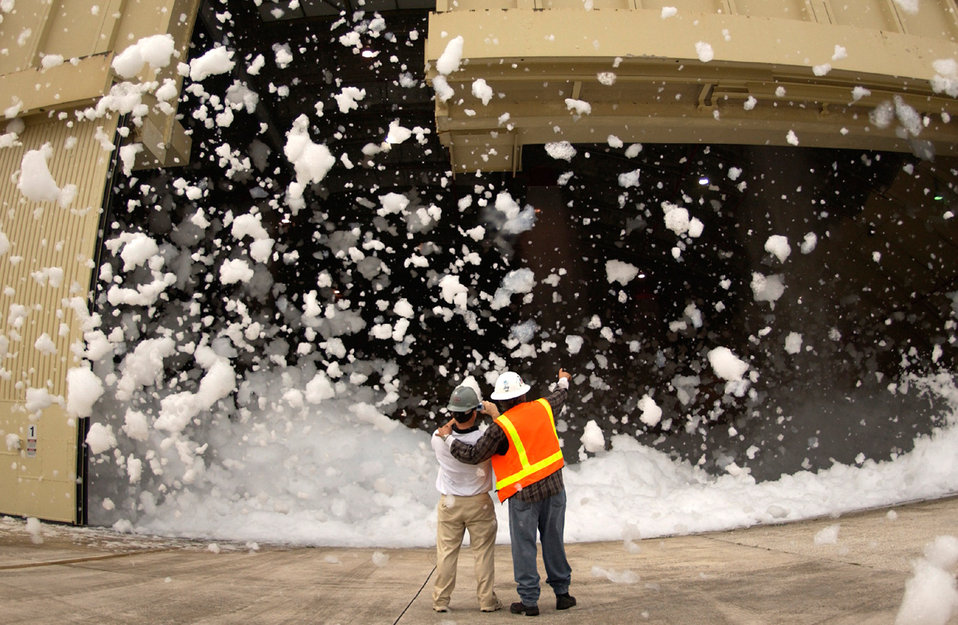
Fighting fire with foam

ANDERSEN AIR FORCE BASE, Guam -- Contractors for the 36th Wing's civil engineer squadron test and evaluate a high-expansion foam system here June 30. The system helps fight fires inside aircraft hangars by covering the hanger with up to 12 feet of fire-retardant foam.